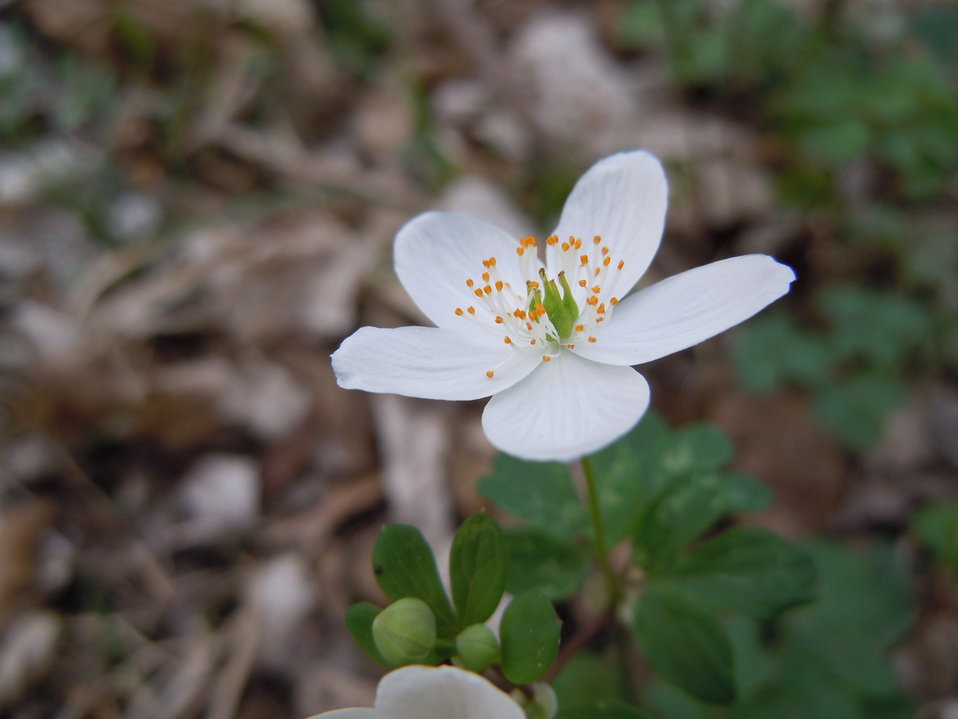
False Rue Anemone